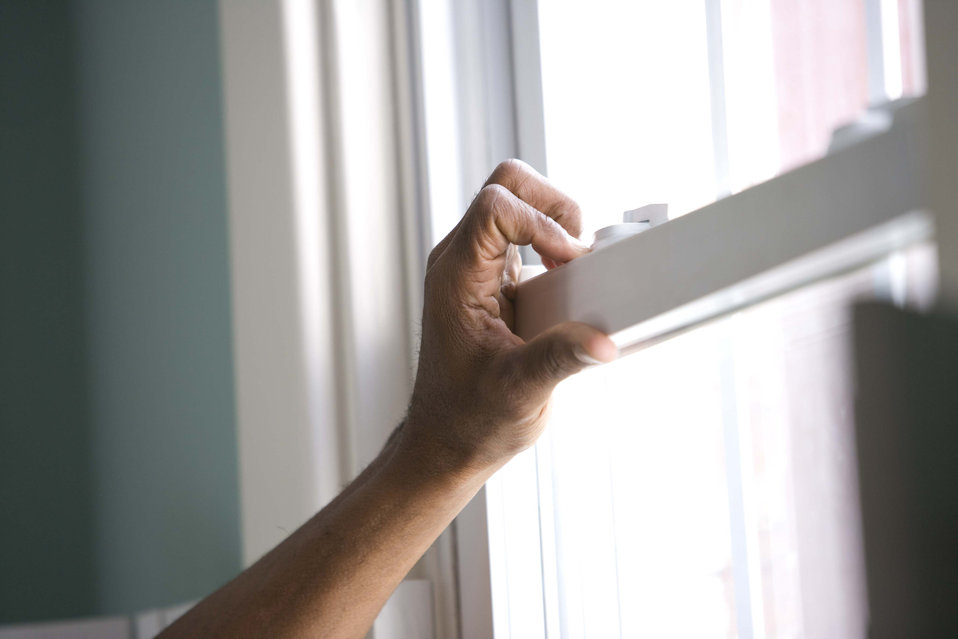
When renovating a home, you should use a damp sponge or cloth to clean dust collected on a window sill, as the dust may contain asbestos or lead-based paint. Home maintenance is an ongoing process for any homeowner, and here we see an African-American man as he was preparing a window in his home for a general cleaning.